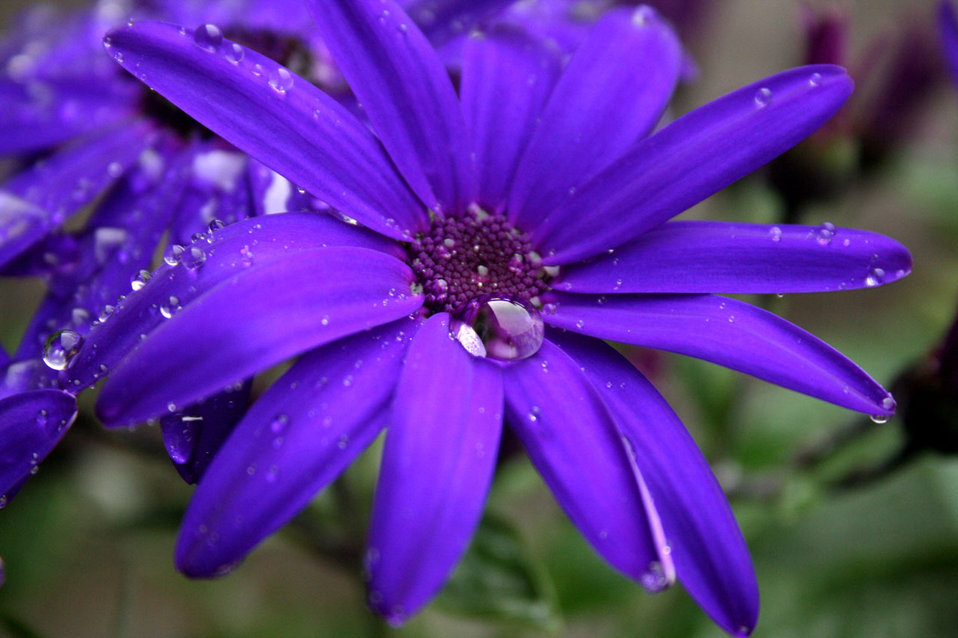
Flower

Lovely purple ...